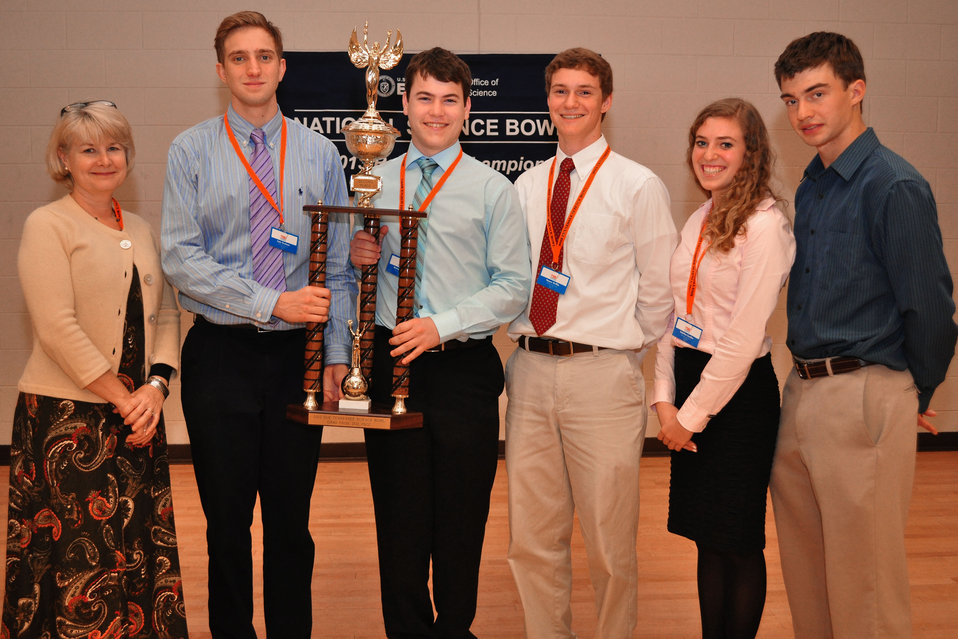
Bearden High 2st Place Tennessee Science Bowl 2013

13-010 DOE photo Lynn Freeny 2-23-2013 Left to right Coach Julie Smalling, Cole Graham, Michael Pearce, Hayes Griffin, Tabitha Colter, Dalton Chaffee

Maryville Tennessee